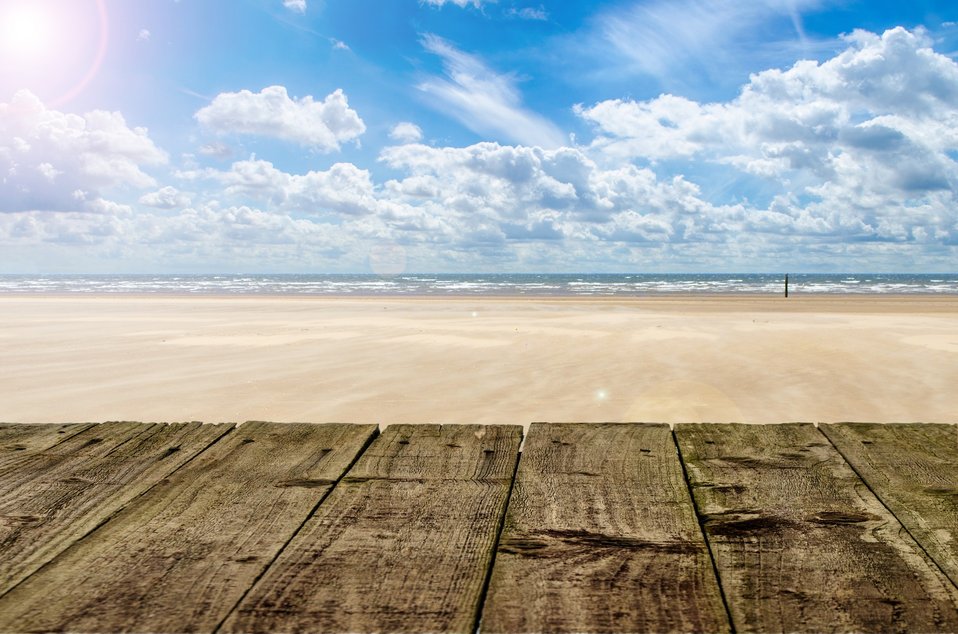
Wood terrace on the beach and sun l

Wood terrace on the beach and sun light.